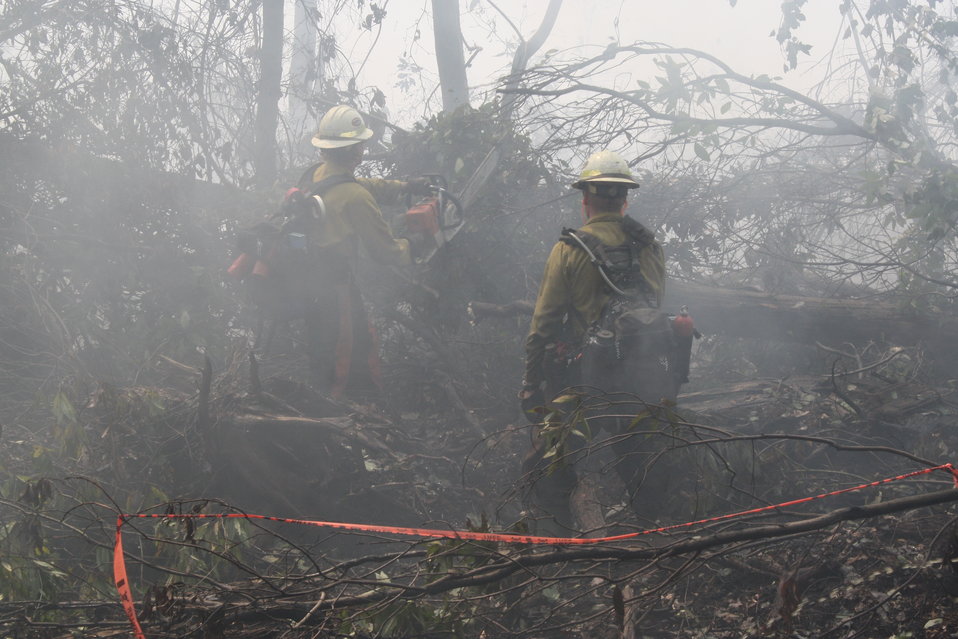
Sawyers at Lateral West

Suffolk, VA, August 2011: Members of the Midewin Hot Shot Crew saw through trees at the Bull North spot fire in Great Dismal Swamp. Hot Shots are the most experienced ground-based firefighters.